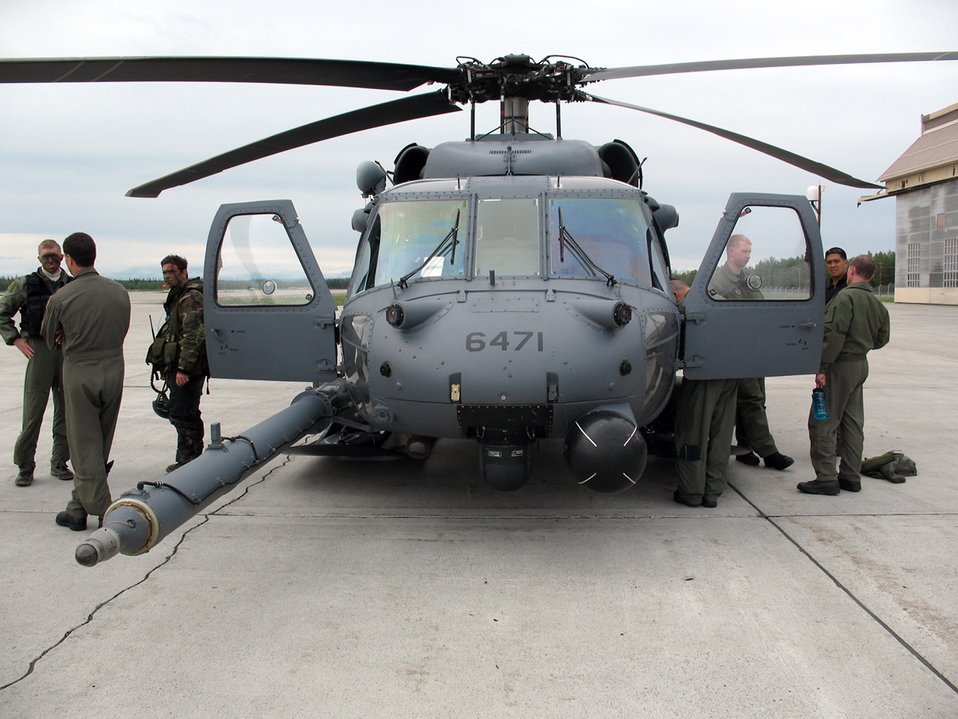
Exercise prepares Airmen at Red Flag-Alaska

Aircrew members and pararescuemen from the Alaska Air National Guard's 210th and 212th rescue squadrons stand near an HH-60 Pave Hawk June 10 after completing a successful search and rescue exercise during Red Flag-Alaska. The teams work together with survival, evasion, resistance and escape specialists to rehearse scenarios for rescuing pilots shot down during combat.